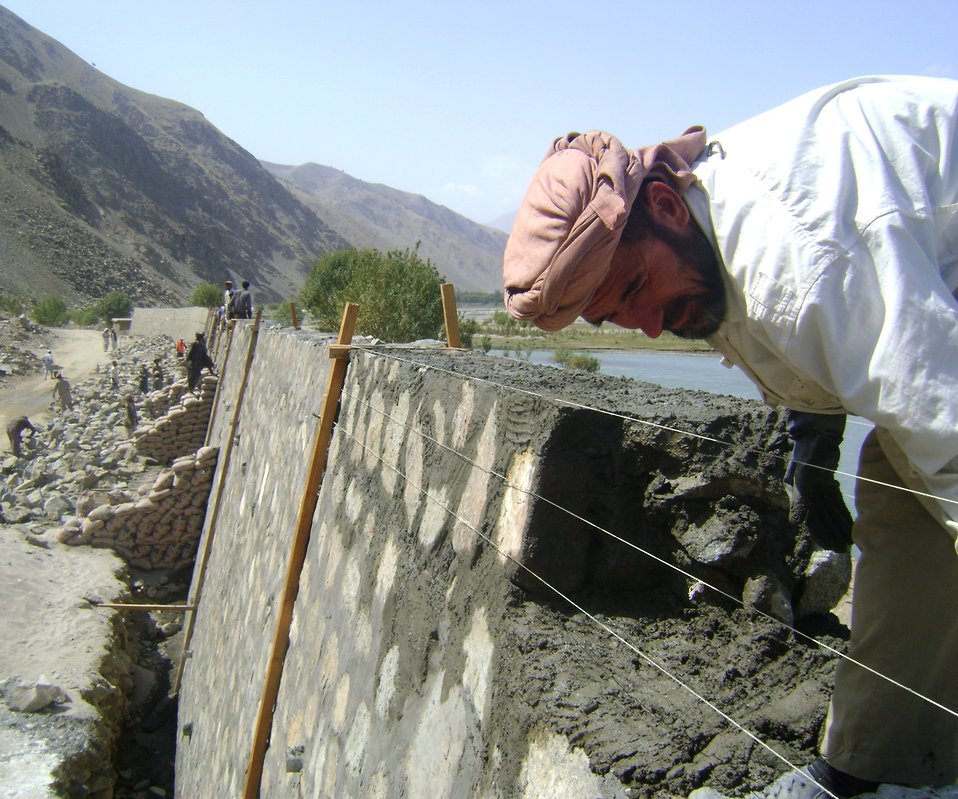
Kishim Fayzabad Stone Masonry Retaining Wall crop